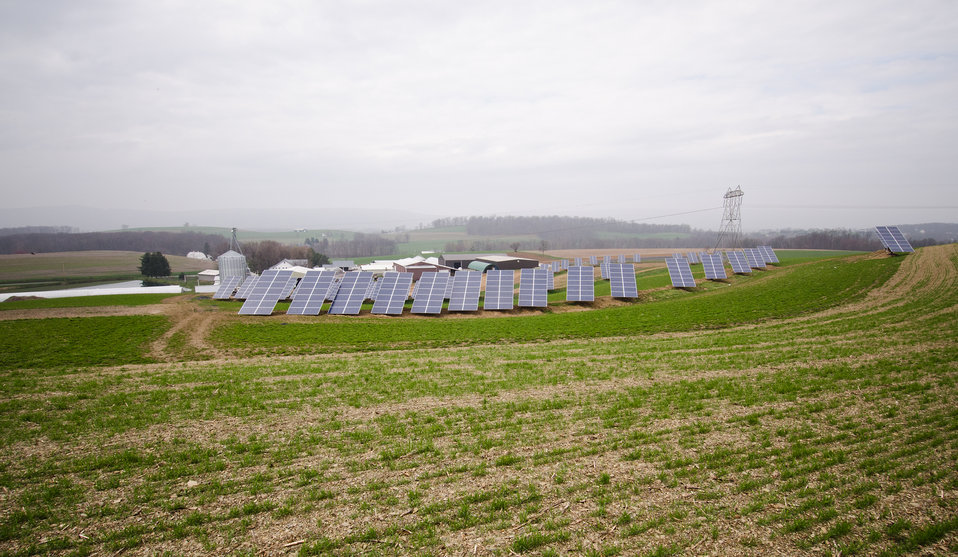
Heidel Hollow Farms has been a family owned farm since 1852 and is currently an 1,800 acre operation in Germansville, PA. Led by David Fink, President of Heidel Hollow Farms, they mainly produce and compact hay for export and grow produce on 300 acres for local sale. With the financial help of the U.S. Department of Agriculture (USDA) an 896 panel solar array was recently installed on non farmable diversion ditches. Rated at 200 kilowatts, they project 240 megawatts of electricity to be produced each year, providing up to 70% of the farms electrical needs. Electrical energy is sent into the local power grid for credit and draw power from the grid with preexisting connections. Photograph was taken on Wednesday, April 20, 2011.